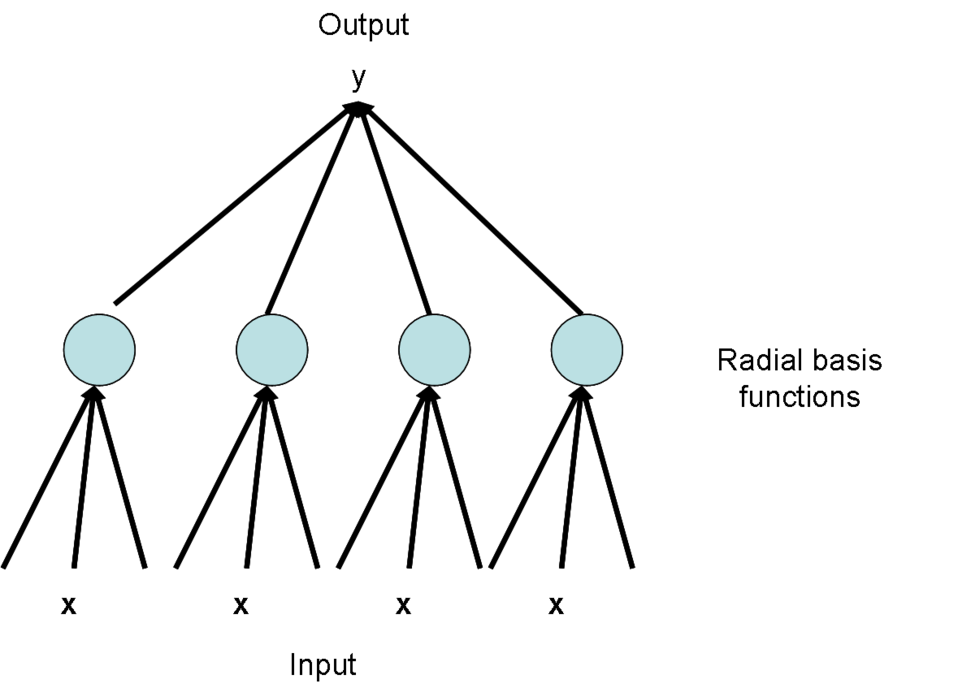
author=commodicast